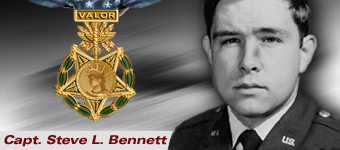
Capt. Steven L. Bennett, Medal of Honor recipient.